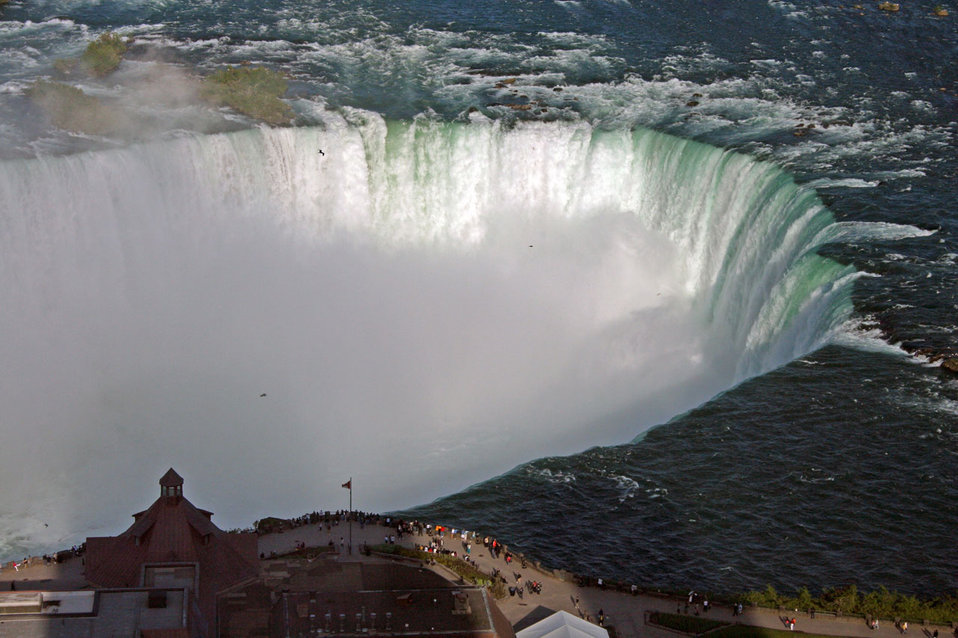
Horseshoe falls

Taken from 36th floor of embassy suites.